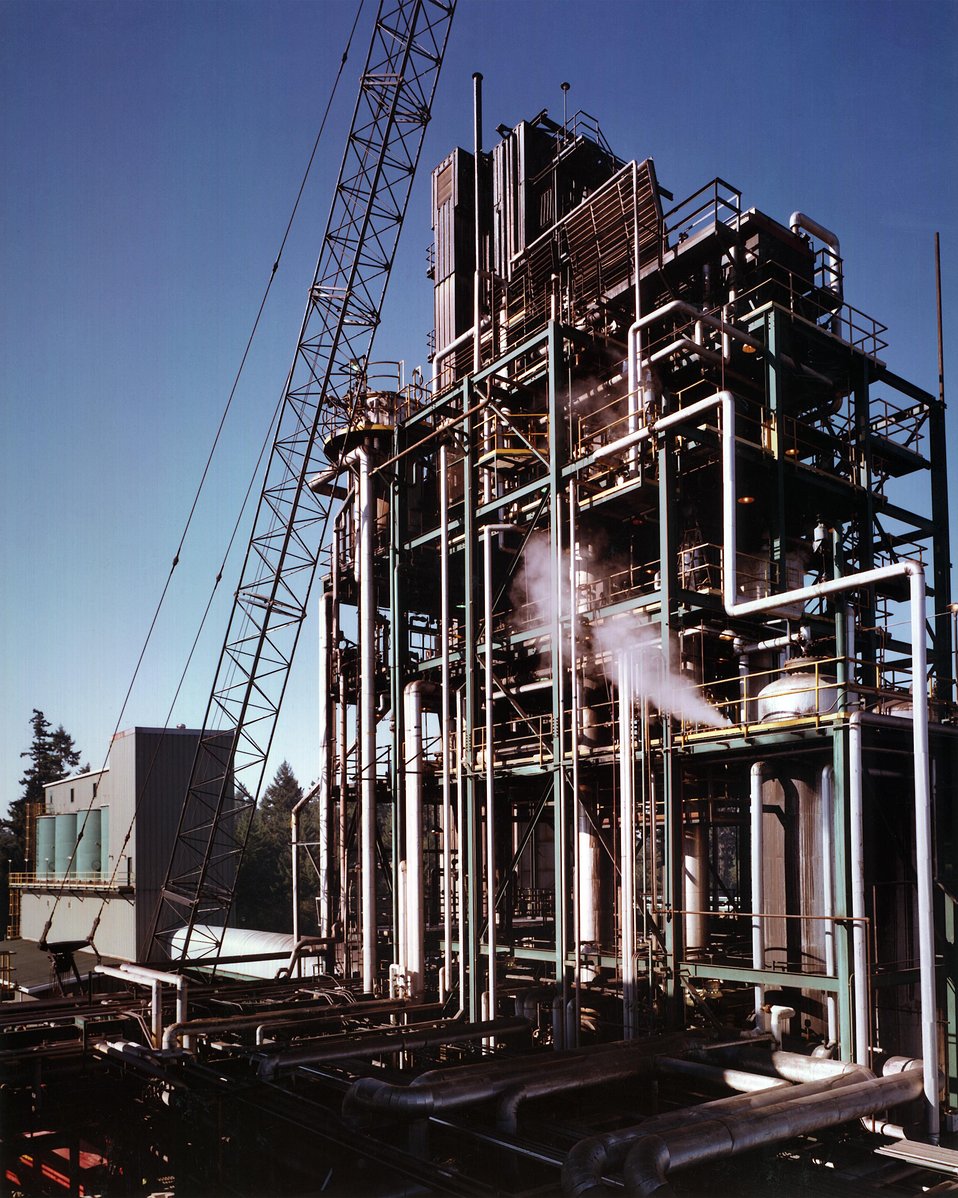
VIEW OF FRACTIONATION PROCESS.